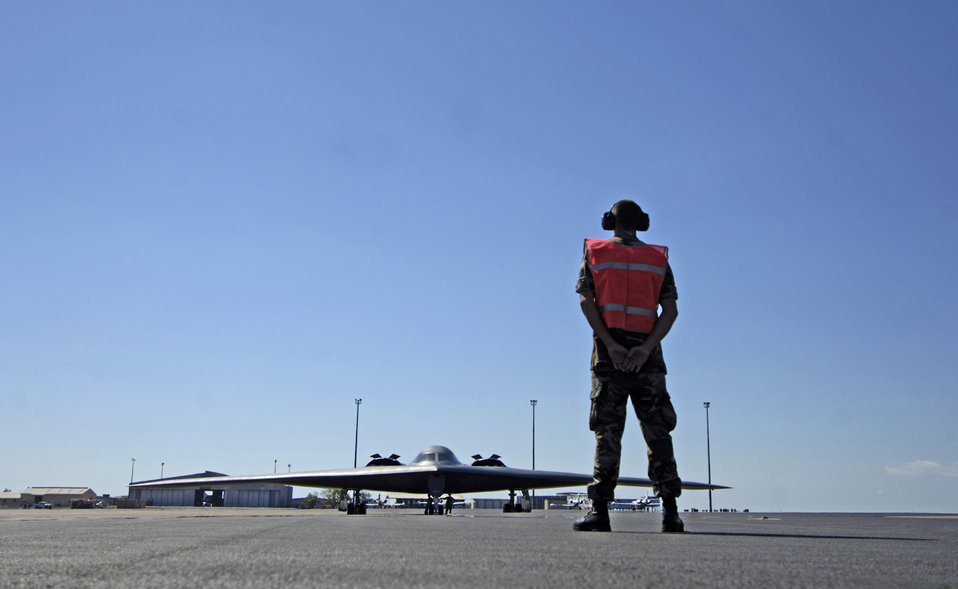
Green Lighting tests Pacific bomber force

Staff Sgt. Jeremy Hord waits to marshal a B-2 Spirit stealth bomber from its parking spot at Royal Australian Air Force Base Darwin on July 27 during exercise Green Lightning. The exercise tests U.S. capabilities and provides operational familiarity in the region for the Pacific bomber presence while also serving to enhance relations with the Australians. Sergeant Hord is from the 509th Aircraft Maintenance Squadron at Whiteman Air Force Base, Mo.